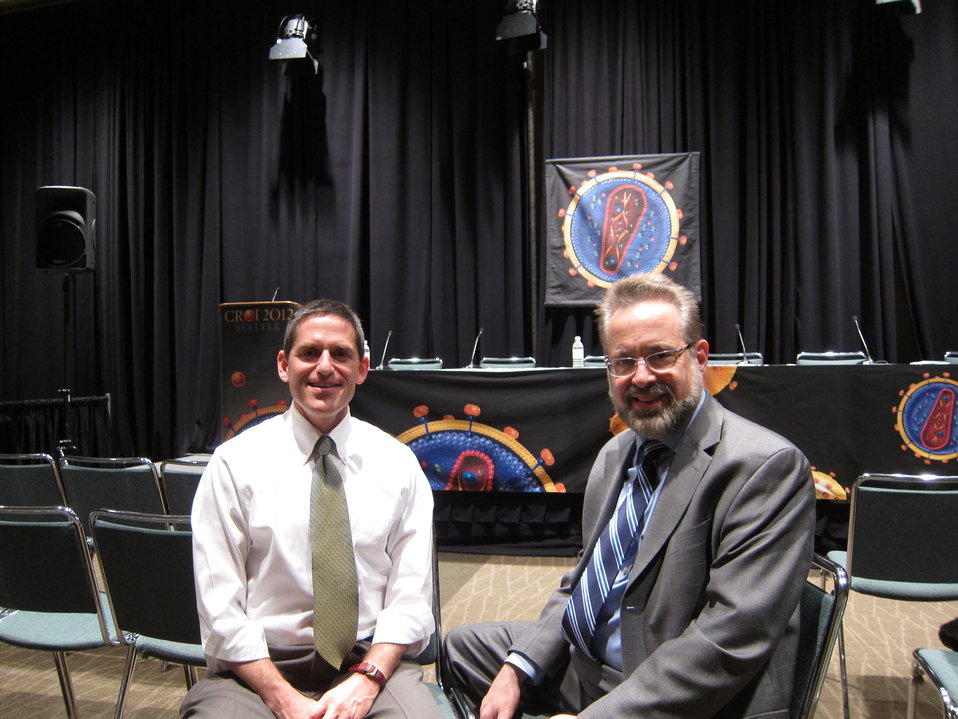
CROI: J Mermin CDC and RV